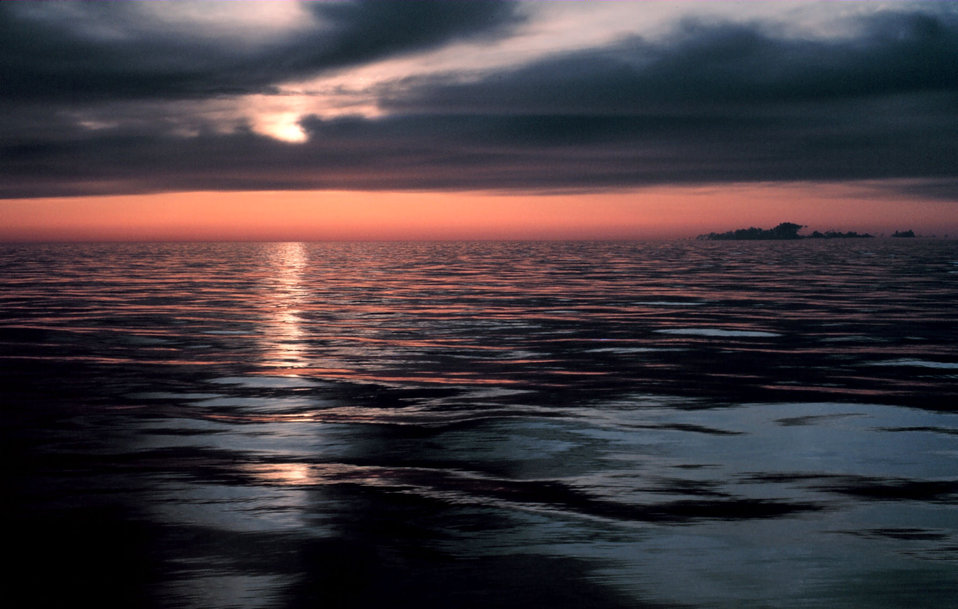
Sunset over a calm ocean